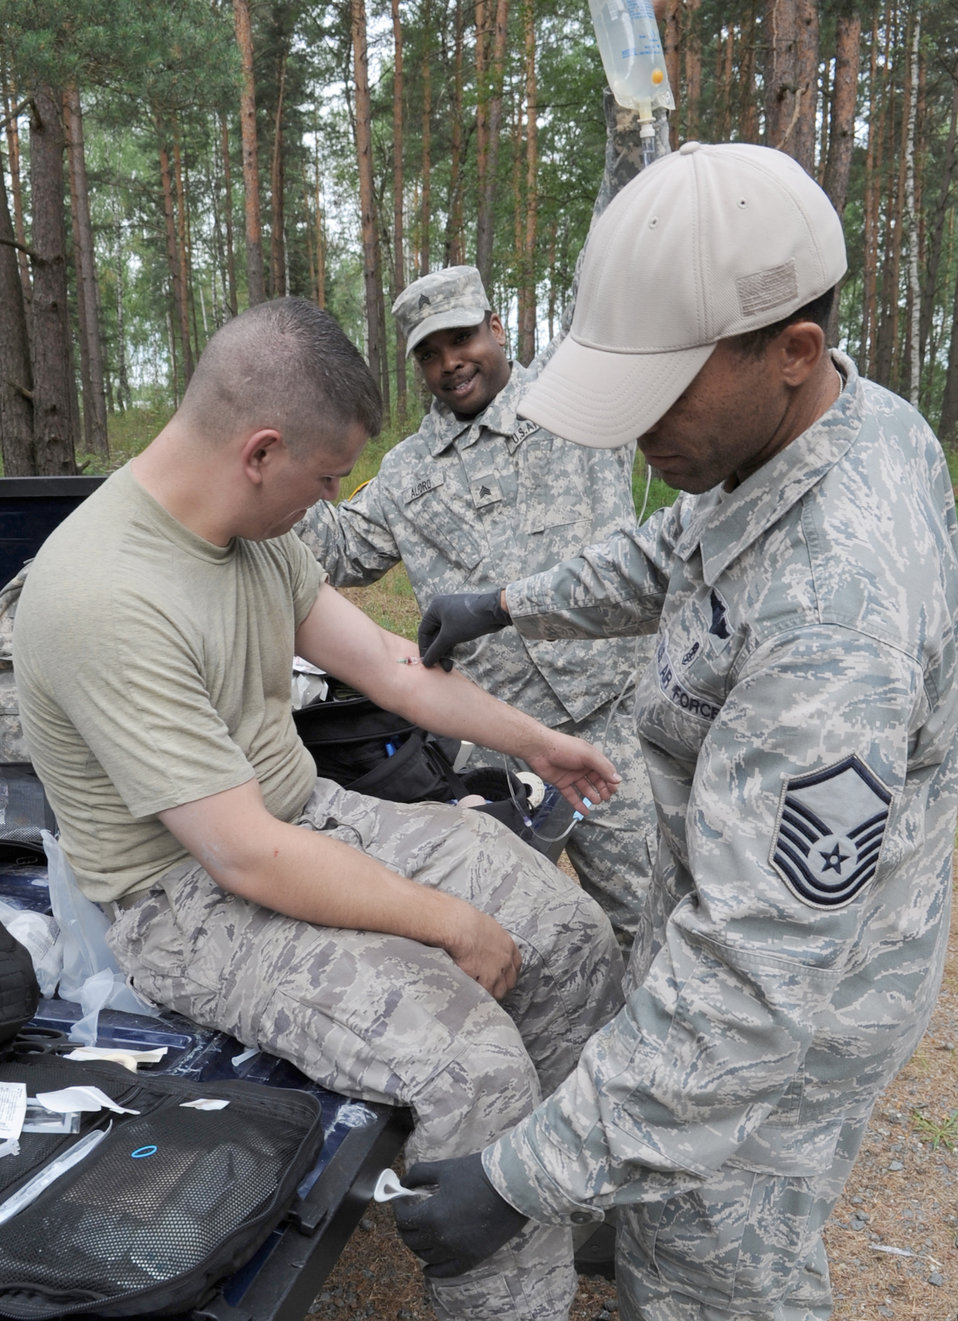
Exercise Allied Strike 2010

Master Sgt. Ronnie Wright and Army Sgt. Derrick Alford provide medical care to Senior Airman Joshua Romero after completing an obstacle course during Exercise Allied Strike 10 July 23, 2010, Grafenwoehr, Germany. Sergeant Wright is a435th Security Forces Squadron medic, Sergeant Alford is a Headquarters Company combat medic and Airman Romero is assigned to the 1st Air Support Operations Squadron radio maintenance flight.